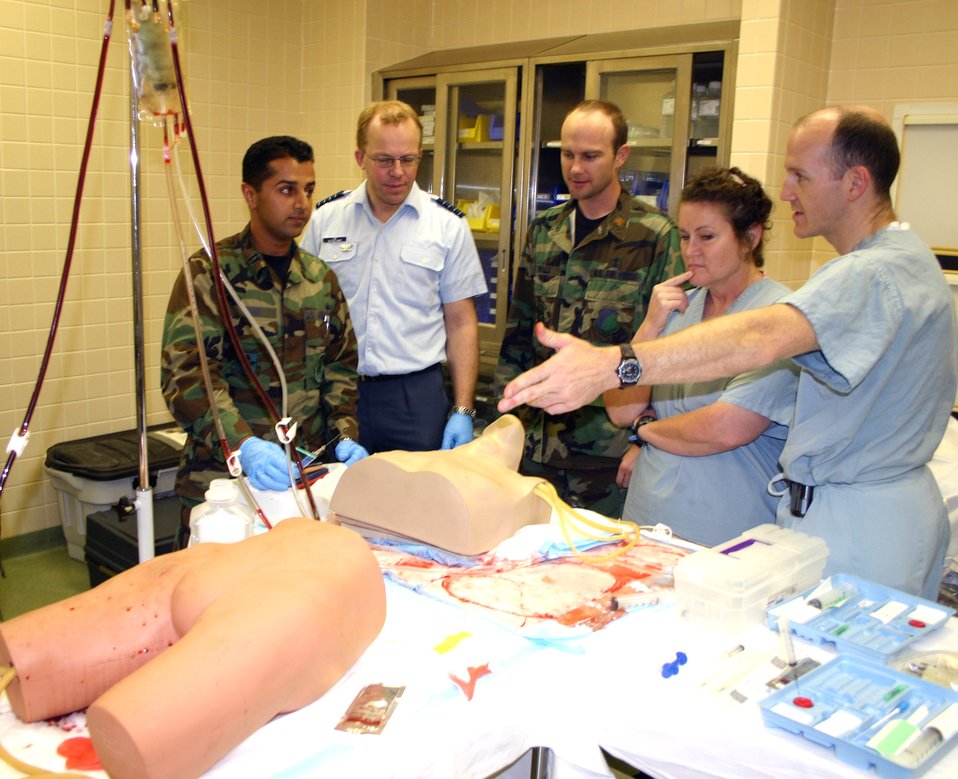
Advanced trauma life support training returns to Wilford Hall

Maj. (Dr.) Daniel Bonville (right) uses a mannequin to show the importance of quick intravenous access for patients needing fluids and blood. Dr. Bonville is a general surgery physician with the 59th Medical Wing at Lackland Air Force Base, Texas. Students (from right) are Marla Beavers, a physicians assistant, Maj. (Dr.) Ryan Wells, an emergency department physician, Col. (Dr.) Michel Los, an anesthesiologist, and Capt. Zulfqar Shah.